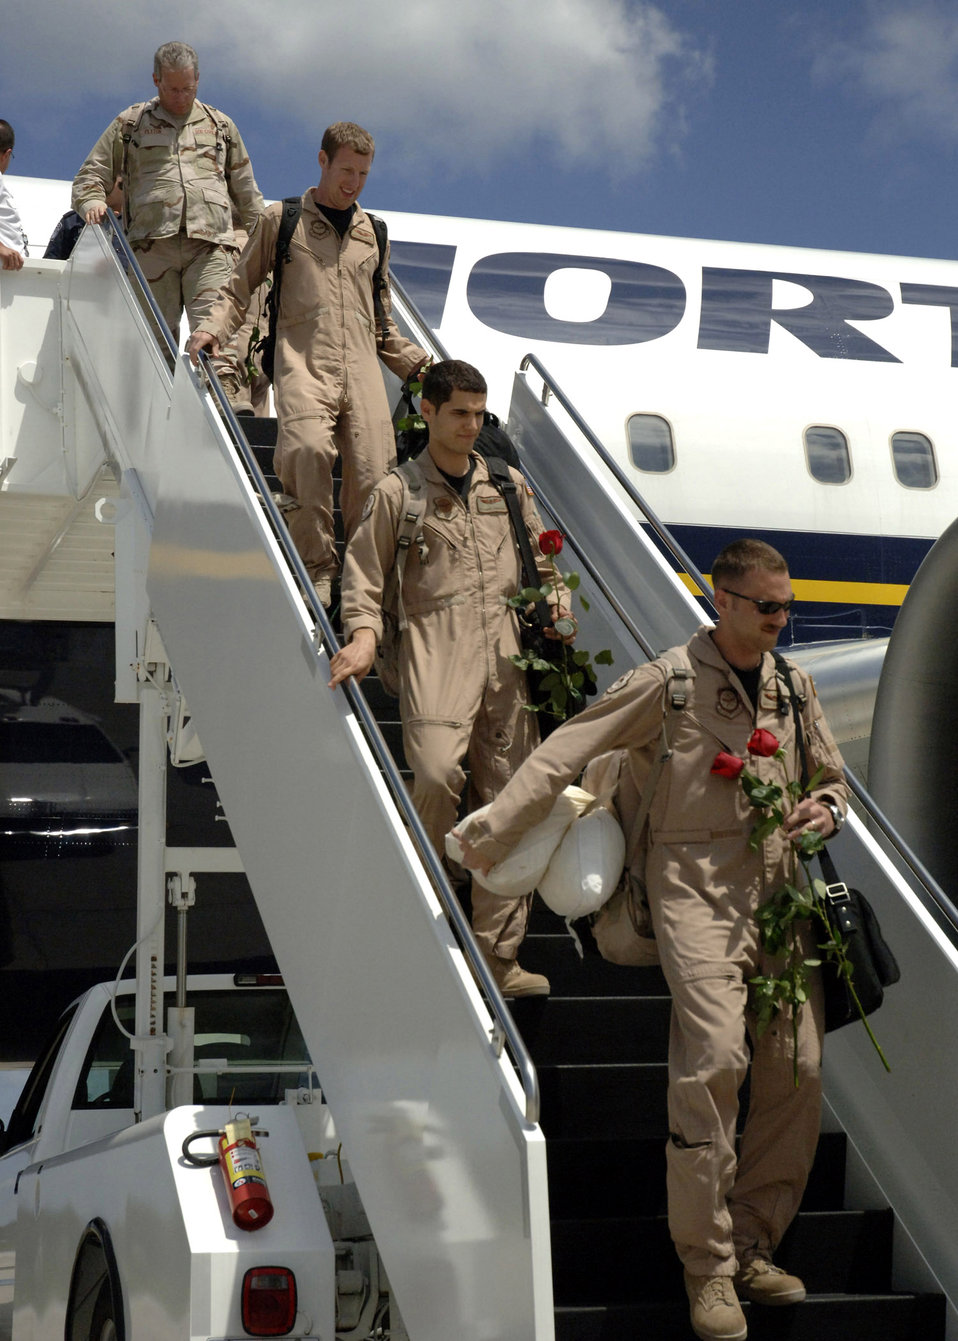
Nothing can be finer than to be in Carolina

Airmen from the 16th Airlift Squadron make their way off a plane to be with family members and loved ones Sept. 3 at Charleston Air Force Base, S.C. More than 117 Airmen from the 16th AS returned to Charleston AFB after being deployed for more than four months to Southwest Asia.